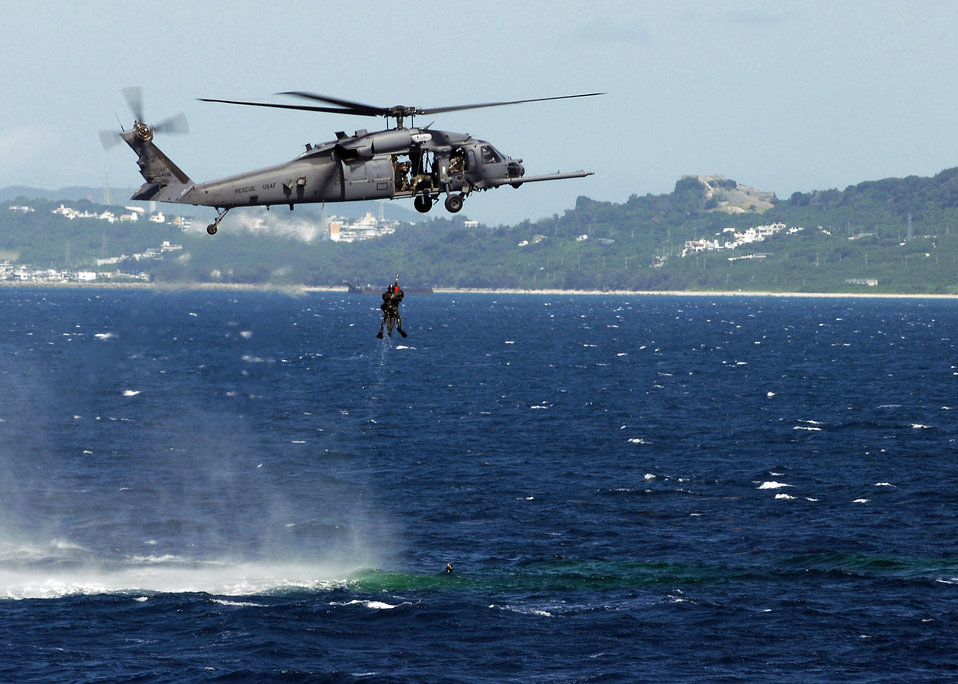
To the rescue

An aircrew on board an HH-60G Pave Hawk hover over one of two downed pilots during a crisis management exercise Oct. 8 off the coast of Okinawa, Japan. Members of the 18th Wing from Kadena Air Base, Japan, and the Japanese coast guard rehearsed response procedures for a simulated over the water aircraft accident. The aircrew are assigned to the 33rd Rescue Squadron.